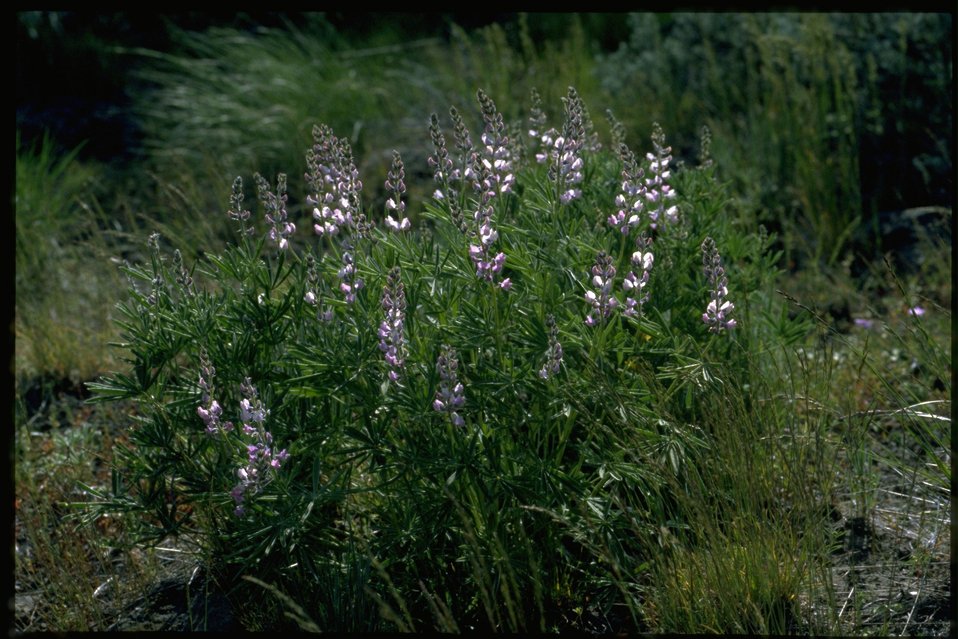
Far shot of Lupine wildflower.